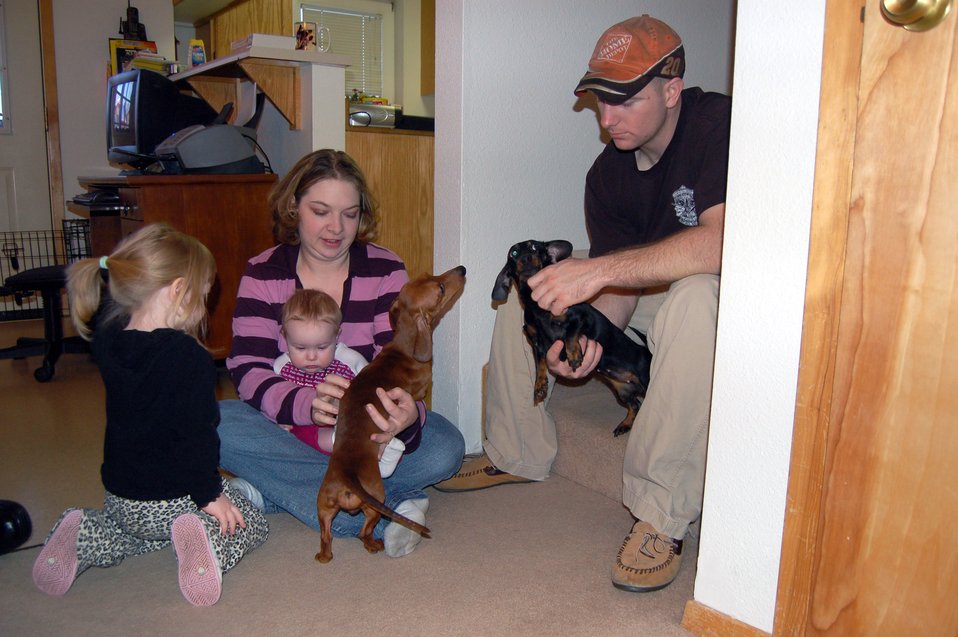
Eielson helps Airmen move into new homes in a hurry

Staff Sgt. Philip Bridges, his wife, Jamie (center), Liberty (left), and 8-month-old Lily, play with their dogs in their new home in base housing Feb. 27 at Eielson Air Force Base, Alaska. They were one of 300 families living in the Sprucewood Homes section of the base's privatized housing. The Bridges and other Air Force families had to be moved out of the privatized housing into new housing from September to December. The reason for the move was due to a conclusion of a privatized housing contract that wasn't able to be renegotiated.